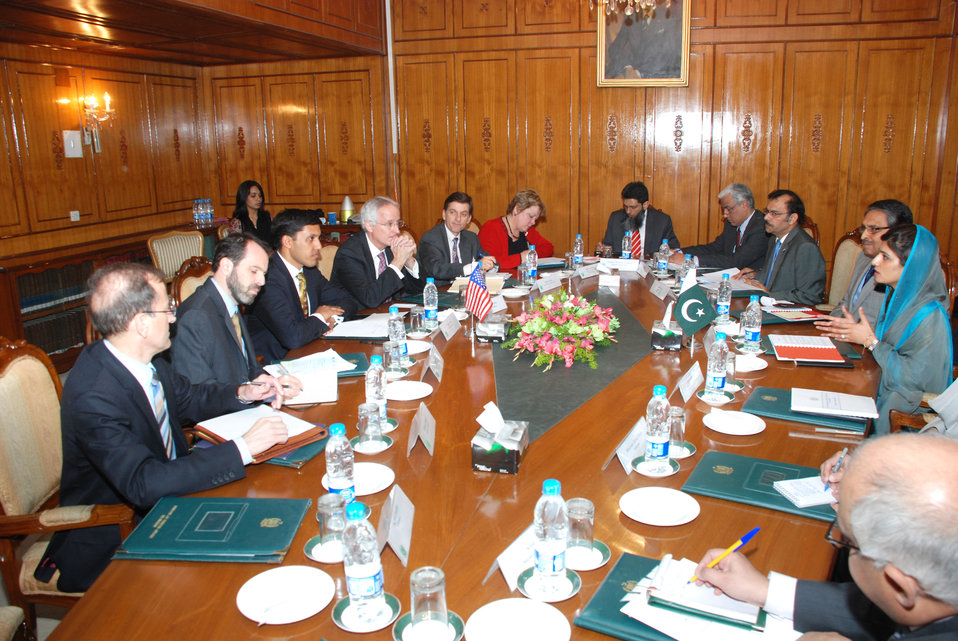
US officials Meeting with Minister of Foreign Affairs, Assistance to Pakistan Remains Strong at Islamabad on April 14, 2012